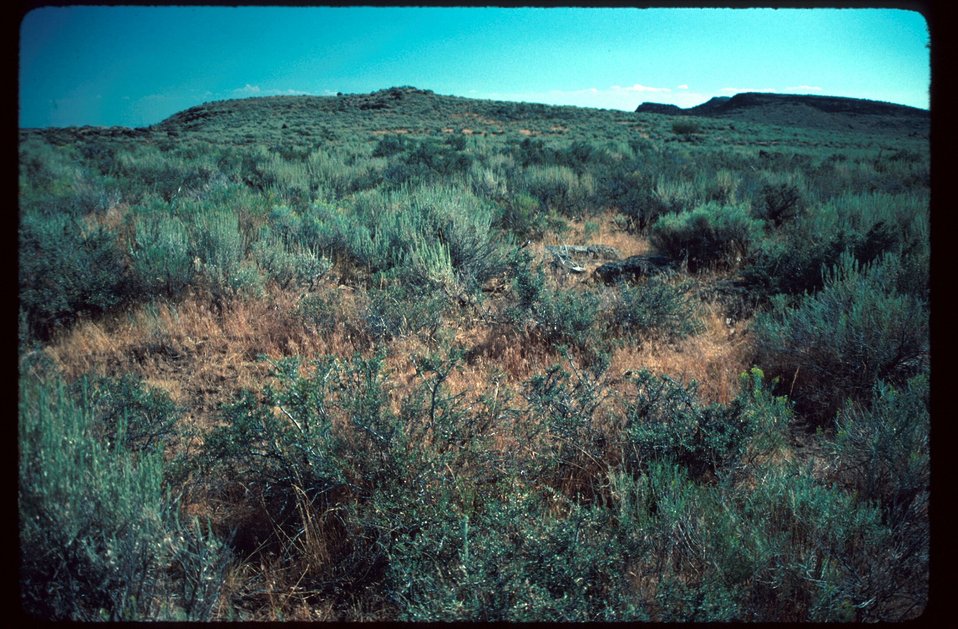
Thorn Creek Range Restoration Project